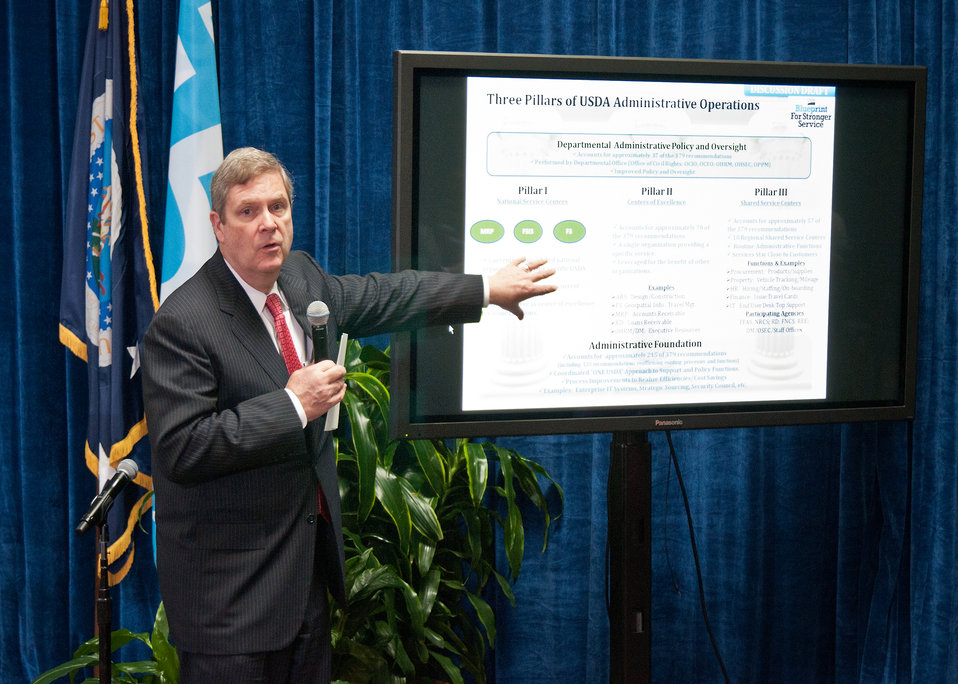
Agriculture Secretary Tom Vilsack explains the Three Pillars of the U. S. Department of Agriculture (USDA) Administrative Operations: National Service Centers, Centers of Excellence and Shared Service Centers during the Ask The Secretary event held in the South Building Cafeteria, in Washington, D.C., on Wednesday, March 21, 2012, gave the opportunity for USDA employees the ask questions about the Blueprint for Stronger Service Initiative and hear directly from Secretary Vilsack. This forum encouraged USDA employees to offer their ideas, voice their concerns, and gather more information on the discussions that are taking place within the USDA Administrative Solutions Project. The Blueprint for Stronger Service Initiative aims to build a modern and efficient service organization that is closely timed with technological innovations - and better suited to respond to 21st century agricultural challenges.